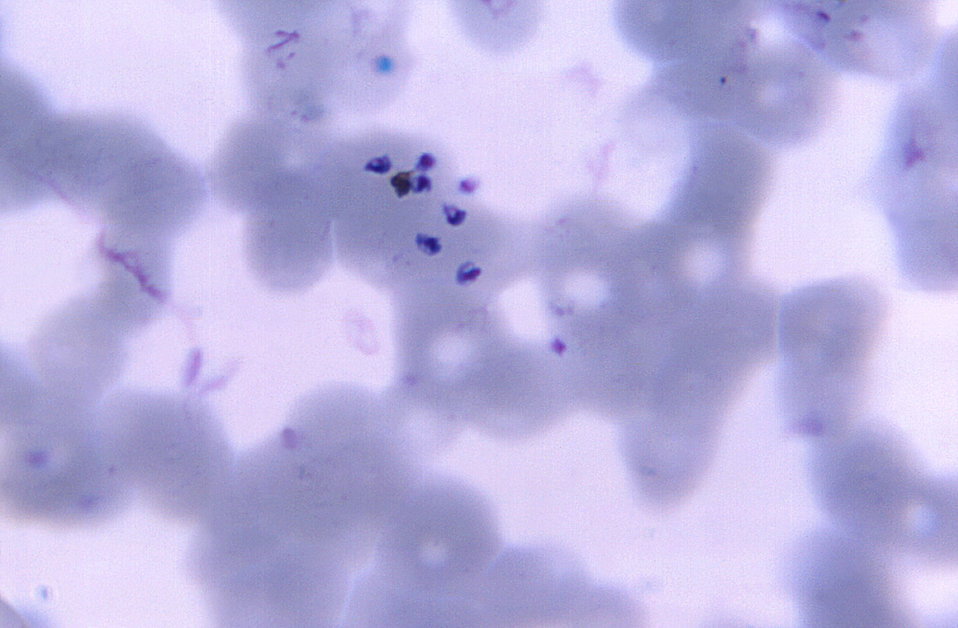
Magnified 1125X, this thin film photomicrograph of a blood smear, revealed the presence of a number of Plasmodium vivax 'free' merozoites, which had been liberated from the confines of their occupied erythrocyte (red blood cell).